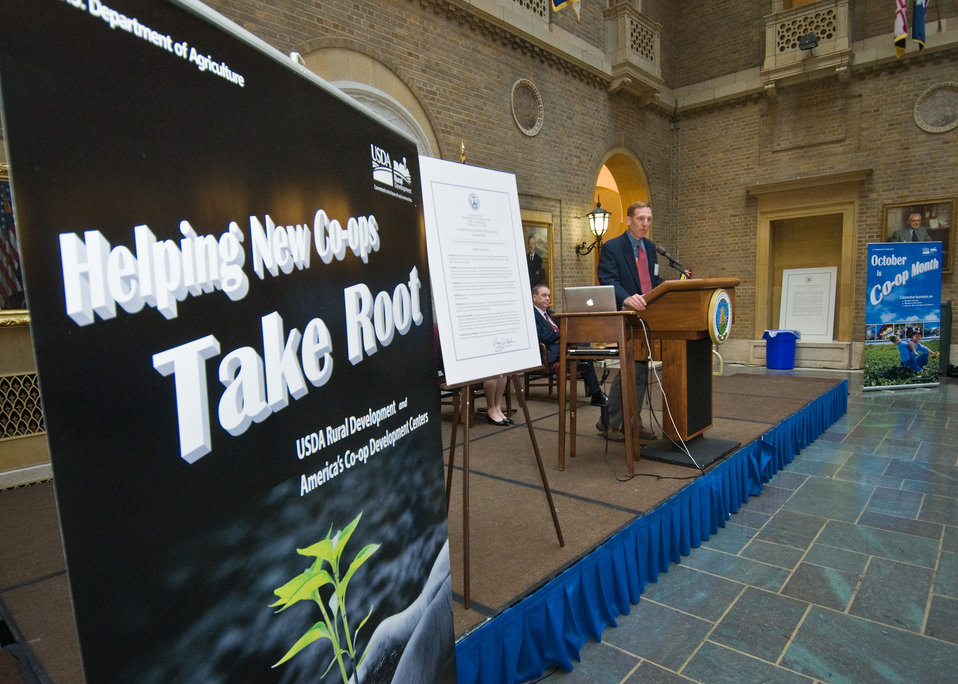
Dr. Brent Heuth, Director, University of Wisconsin Center for Cooperatives speaks of the demographics and economics of rural cooperatives and their importance to rural economies during the celebration of October as National Co-op Month at an event at the Department of Agriculture, Tuesday, October 5, 2010 in Washington, DC. USDA Photo 10di1517-25 by Bob Nichols.